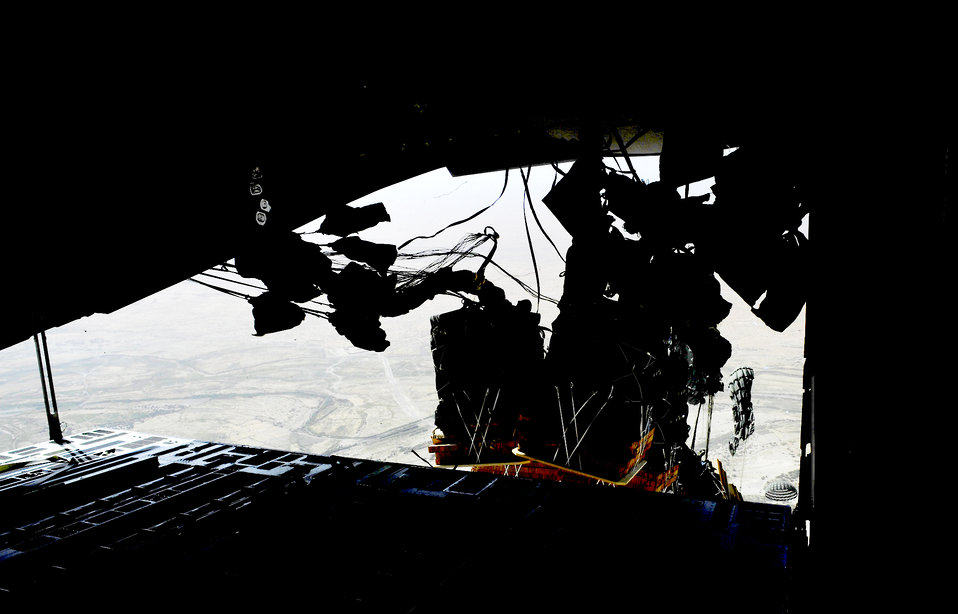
Mobility Airmen continue to deliver for warfighters

Container delivery system bundles full of supplies are dropped out of a C-17 Globemaster III Sept. 23, 2009, over a base in Afghanistan.